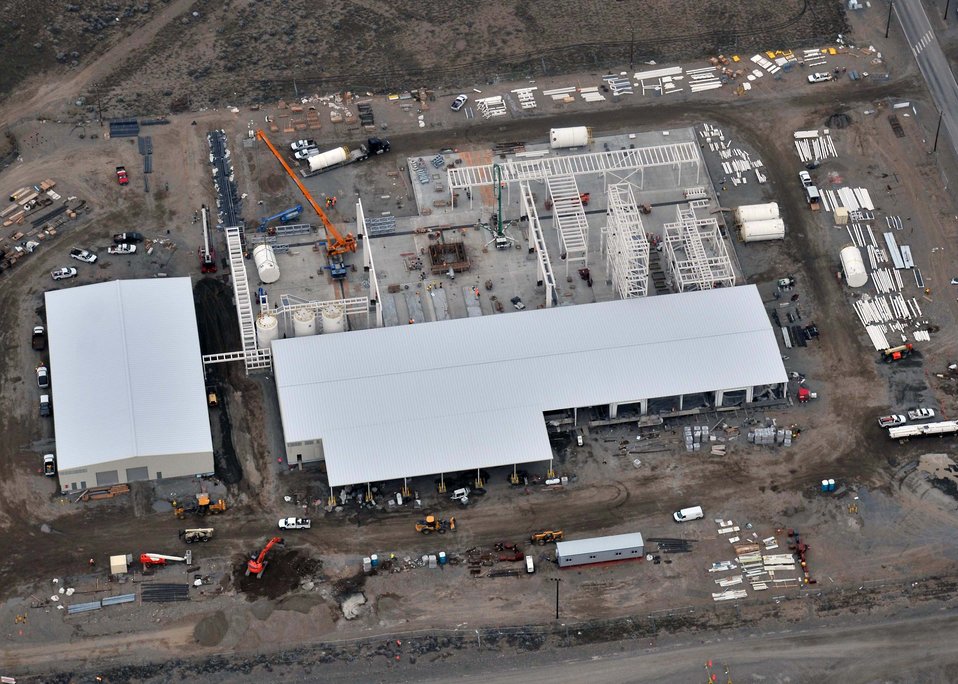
Hanford Recovery Act work

Recovery Act-funded work at the Hanford site.